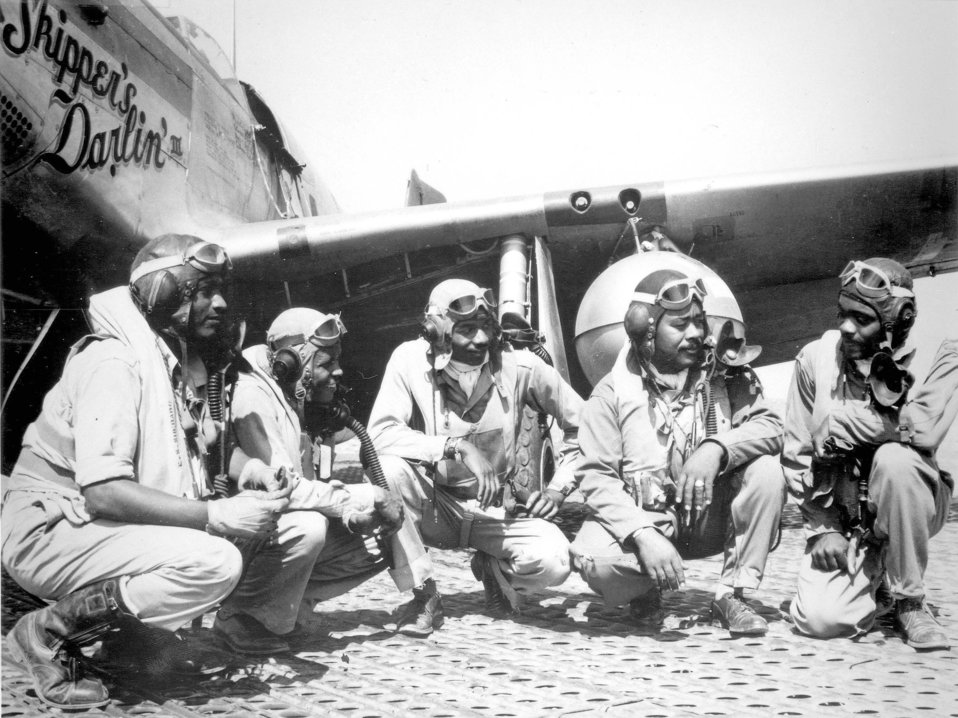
Tuskegee Airmen leave strong legacy

RAMITELLI, Italy -- (From left) Lt. Dempsey W. Morgan, Lt. Carrol S. Woods, Lt. Robert H. Nelson Jr., Capt. Andrew D. Turner and Lt. Clarence D. Lester were pilots with the 332nd Fighter Group. The Airmen with the elite, all-black fighter group were better known as Tuskegee Airmen.